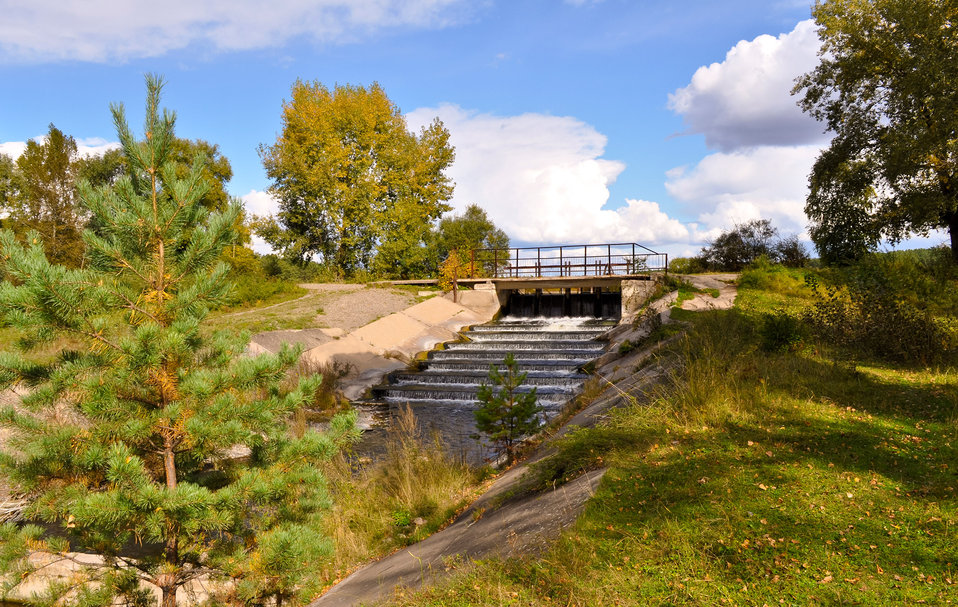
Stage on the lake

Autumn in the forest.